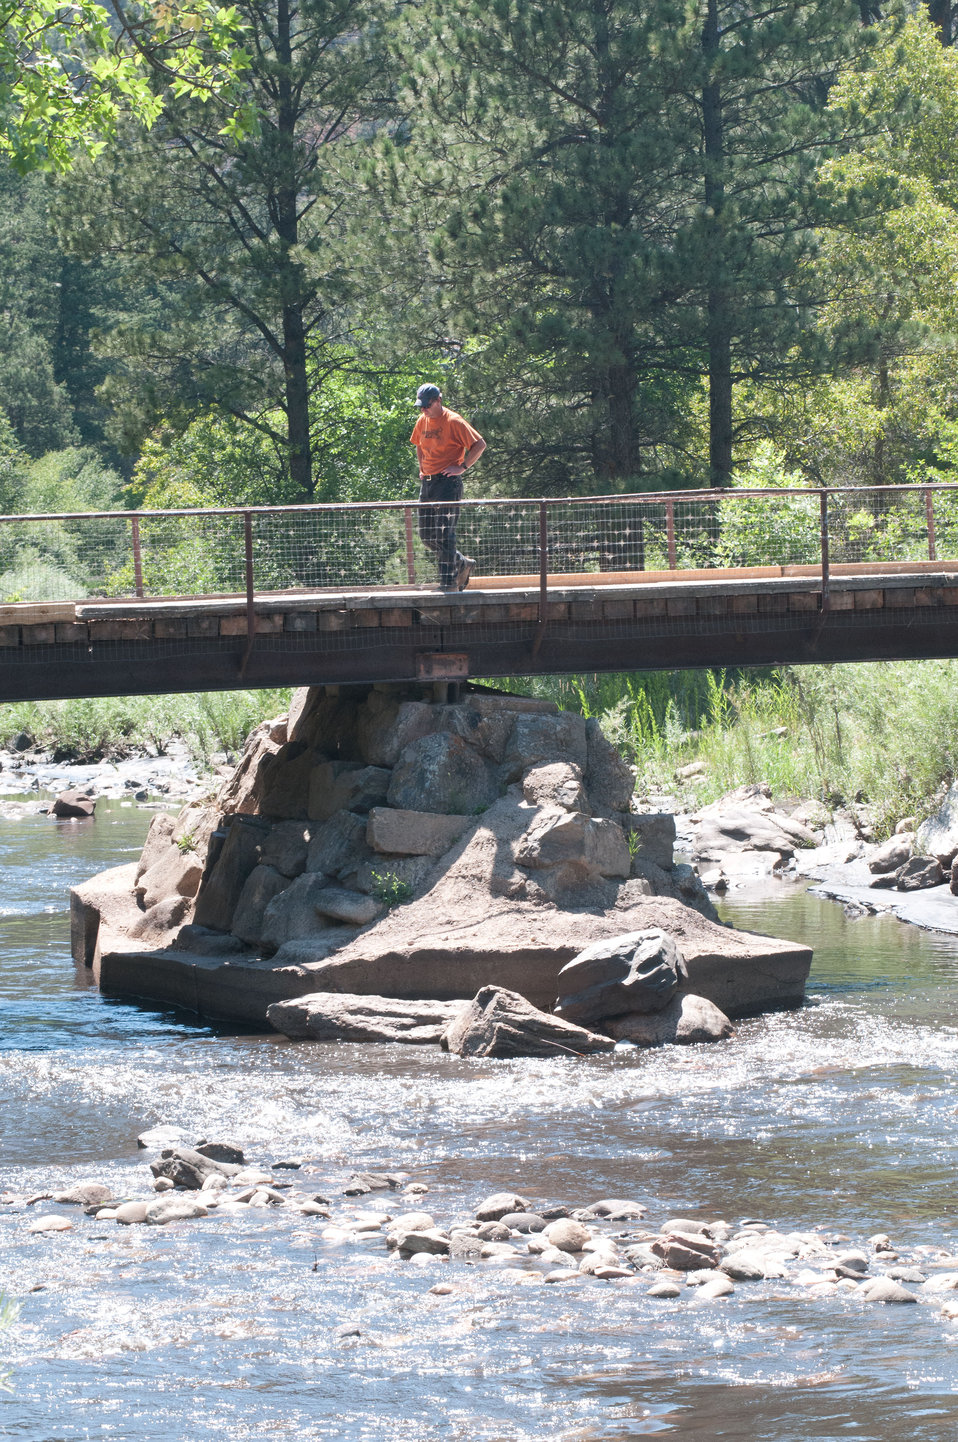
U.S. Department of Agriculture District Conservationist Todd Boldt peers down from a bridge to see the effects of the water in the Hewlett Gulch Fire, in the Poudre Canyon area, on Friday, July 20, 2012, near Fort Collins, Colorado. Unmitigated runoff have turned the water in this river from clear water to nearly black water heavily laden with ash, silt, and burnt debris that recent thunderstorms have already washed down from the mountainsides. When he dug down into the riverbanks, he found ash 18 inches below the surface, at the water’s edge. At its peak more than 400 firefighters were battling fires pushed by 50 mph winds. When the last embers were cooled, more than 12-square miles lay blacked at a cost of approximately 3.2 million dollars to fight. The aerial distribution of straw has successfully kept nearby Seaman Reservoir clean for the drinking water of the City of Greeley. Forest Service lands receive straw, while private and other lands receive a seed mix and straw to promote ground cover plant growth on ash-covered lands. In total, 1,800 tons of straw will be applied during the 14-day operation. One quarter of the cost was paid by the City of Greeley and the U.S. Department of Agriculture funded the remainder.